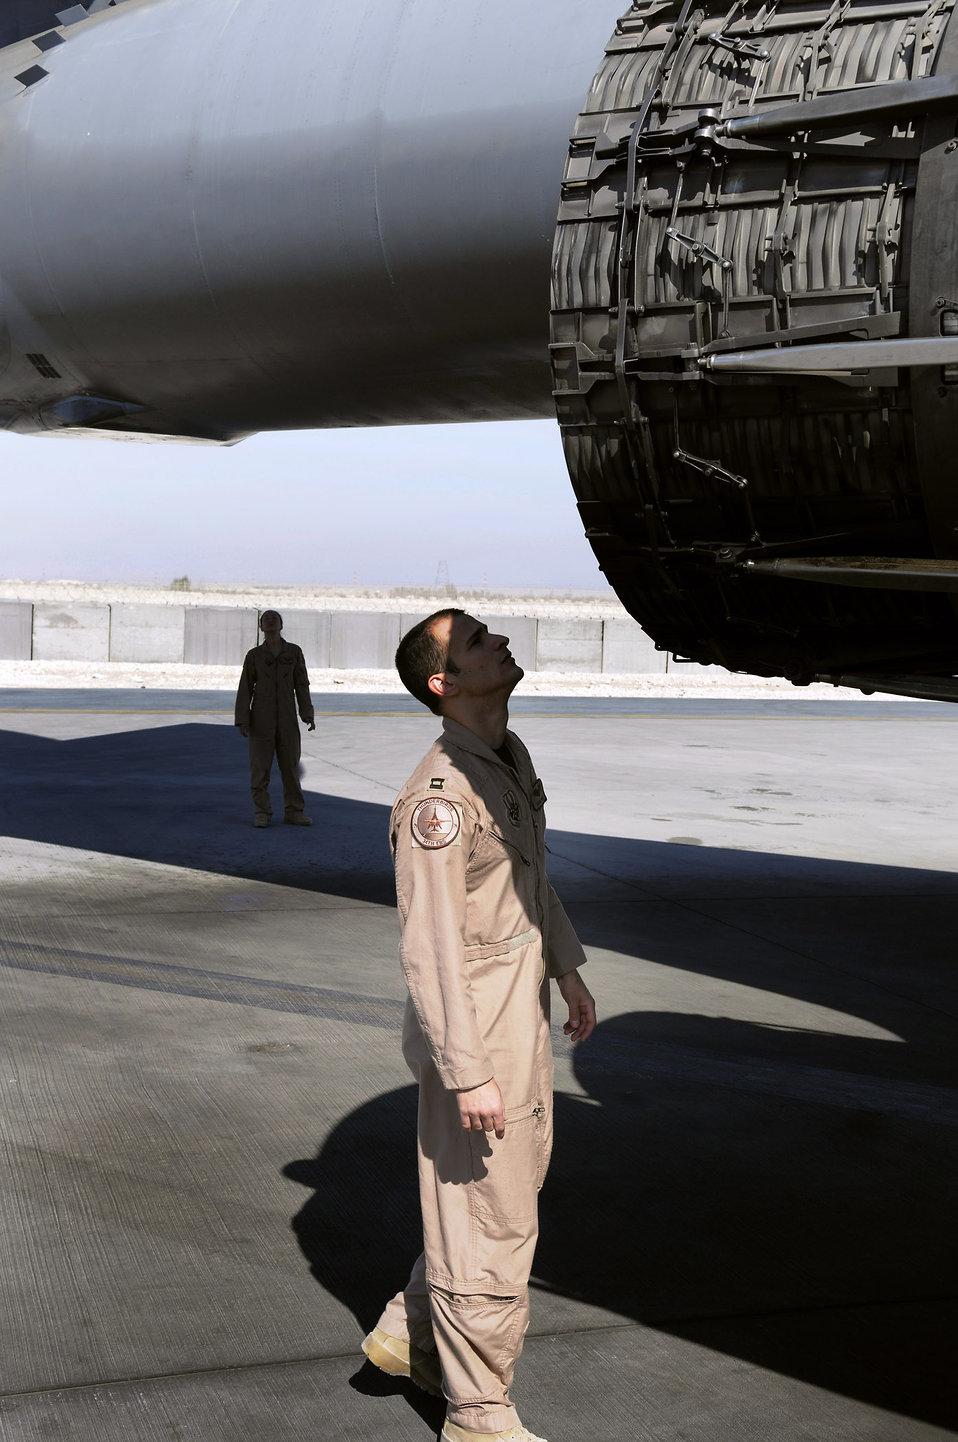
B-1B aircrews bring unique capabilities to the fight

Capt. Aaron Wargo checks out a B-1B Lancer engine while Capt. Daniela Lozano looks over the tail section during a preflight walk around of the aircraft Dec. 9 at an air base in Southwest Asia. Captain Wargo is a B-1B pilot and a native of Garden Grove, Calif. Captain Lozano is a weapons system officer and hails from Dallas. Both are assigned to the 34th Expeditionary Bomb Squadron and deployed from Ellsworth Air Force Base, S.D.